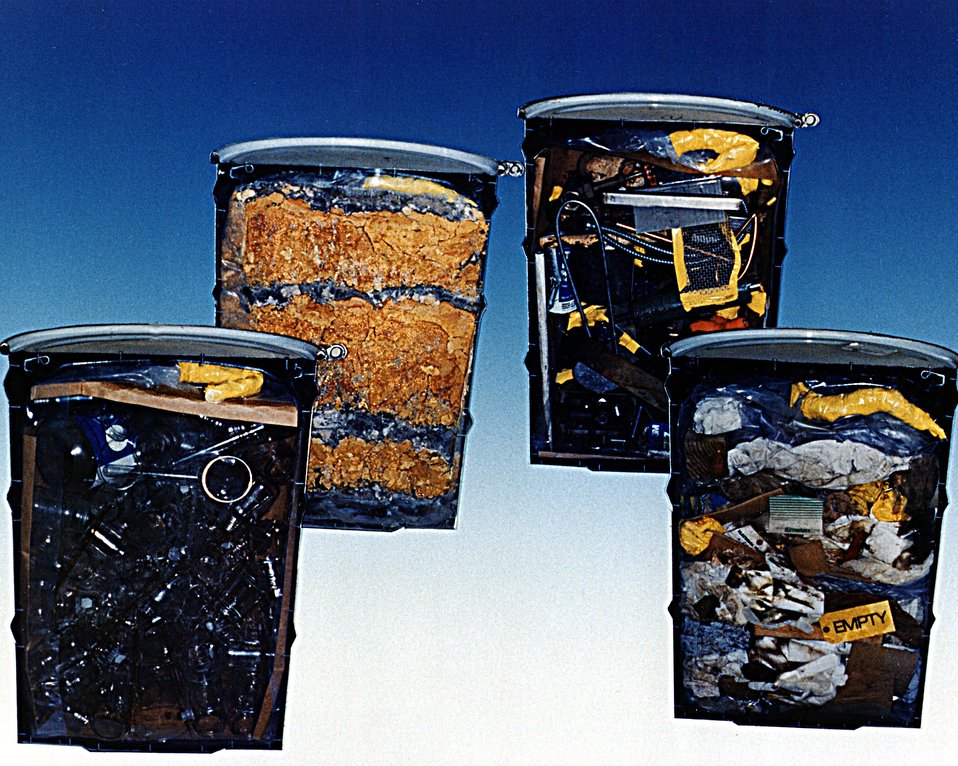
MOCK CONTACT-HANDLED WASTE DRUMS.

THE WASTE ISOLATION PILOT PLANT IS A DOE RESEARCH AND DEVELOPMENT FACILITY FOR DEMONSTRATING THE SAFE DISPOSAL OF TRANSURANIC RADIOACTIVE WASTES. TEST SHAFTS HAVE BEEN DRILLED TO A DEPTH OF 2,100 FEET. THE SHAFTS, ONE 6 FEET IN DIAMETER AND THE OTHER 12 FEET IN DIAMETER, PROVIDE AN ENTRY PASSAGE AND VENTILATION TO THE UNDERGROUND SALT ROCK FORMATION THAT IS BEING TESTED TO DETERMINE ITS SUITABILITY FOR RADIOACTIVE WASTE STORAGE.